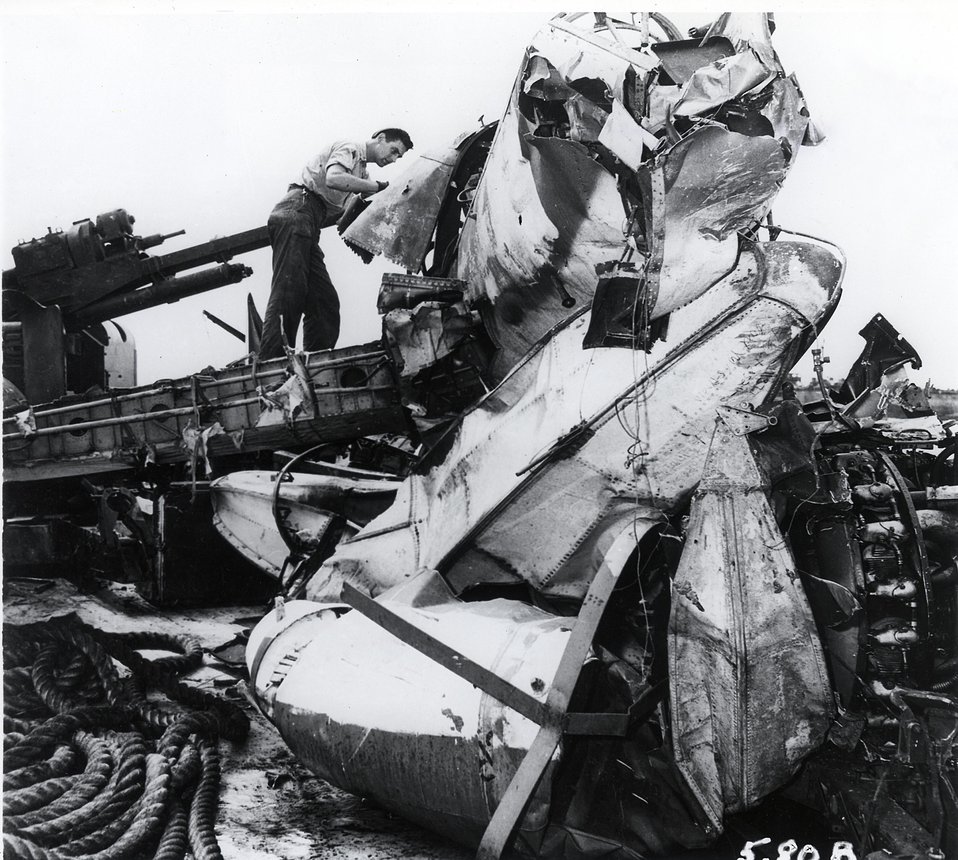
Damage to a Navy seaplane on the USS Nevada.